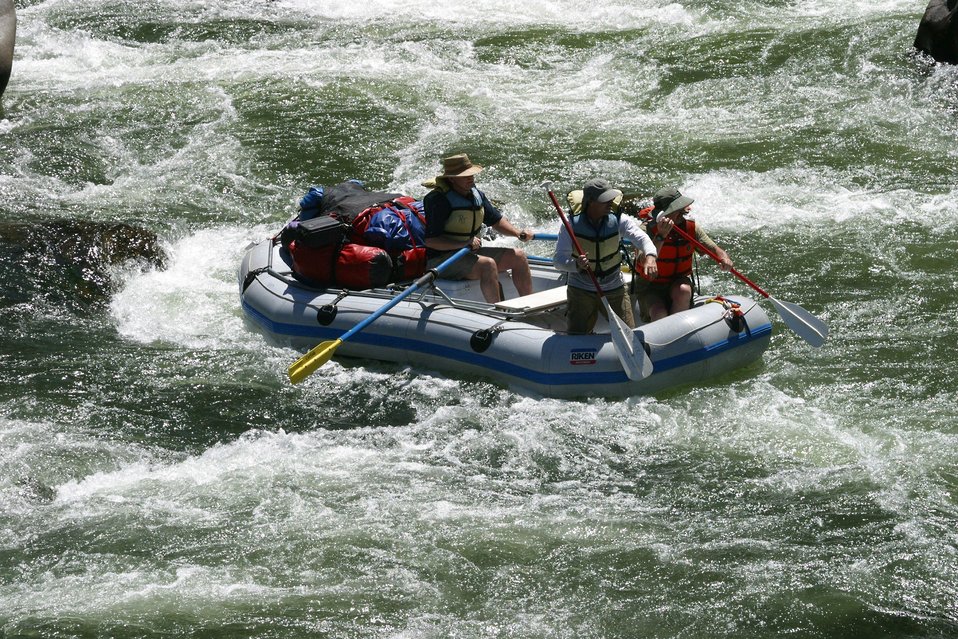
Boaters negotiate Blossom Rapids.